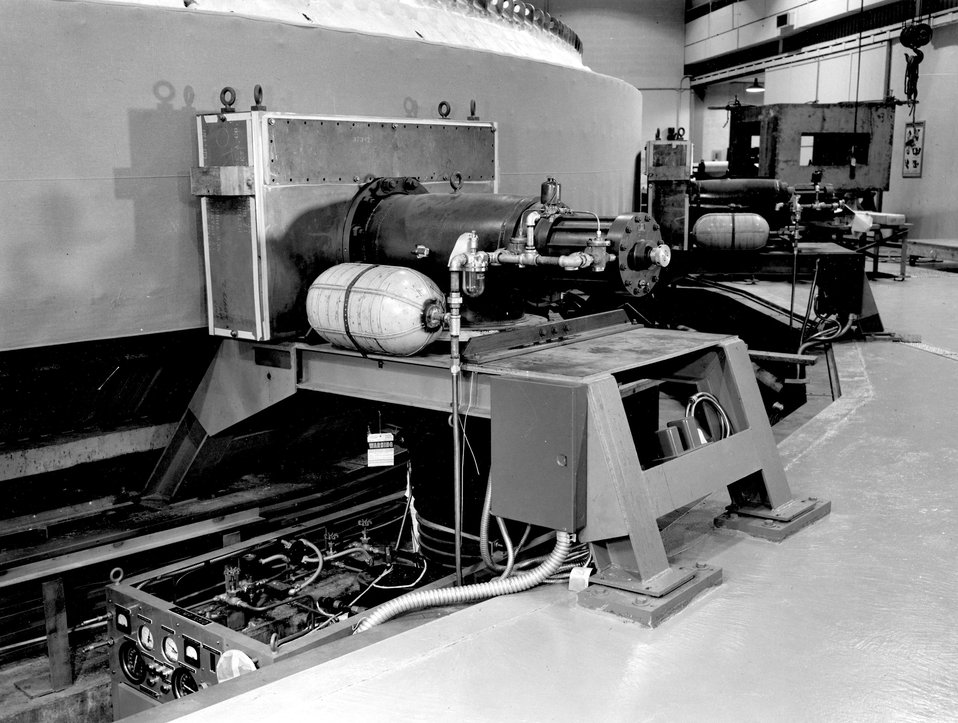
Sixteen-inch vacuum valve and plenum chamber connecting twenty-inch oil diffusion pump to Cosmotron vacuum chamber.